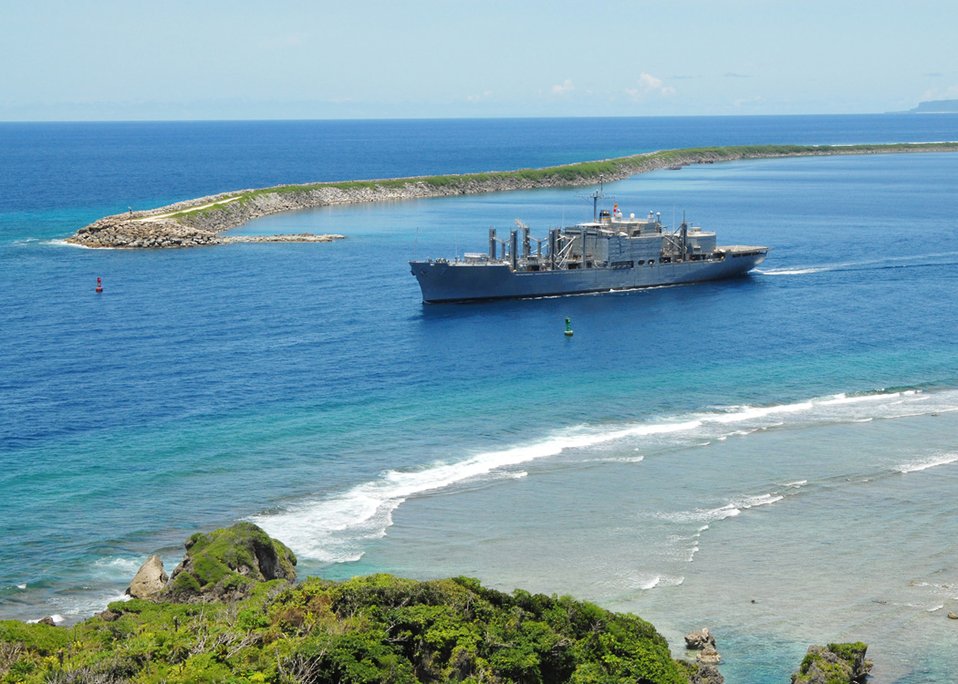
Andersen team prepares Wake Island for aircraft

The USNS San Jose sails out of Guam's Apra Harbor Sept. 4 to begin its 1,500-mile journey to Wake Island. Onboard the San Jose were members of the 36th Contingency Response Group and the Navy Helicopter Sea Combat Squadron 25, both of Andersen Air Force Base, Guam, to make the initial assessment of damage left by Super Typhoon Ioke.